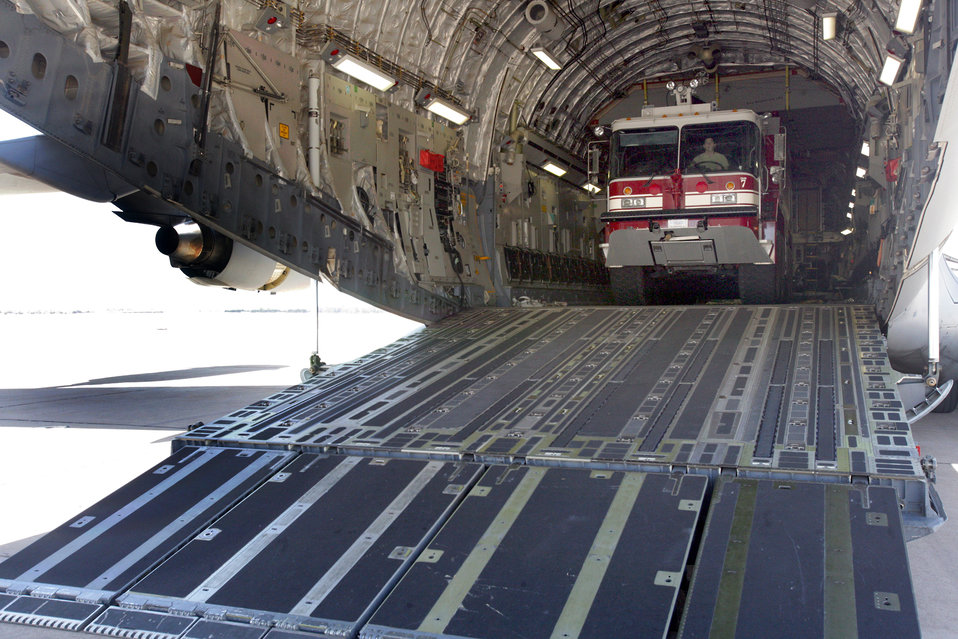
Altus AFB C-17s take training to Fort Sill

Airmen from Altus Air Force Base, Okla., offload a firefighting crash truck March 11, 2011, at Fort Sill.